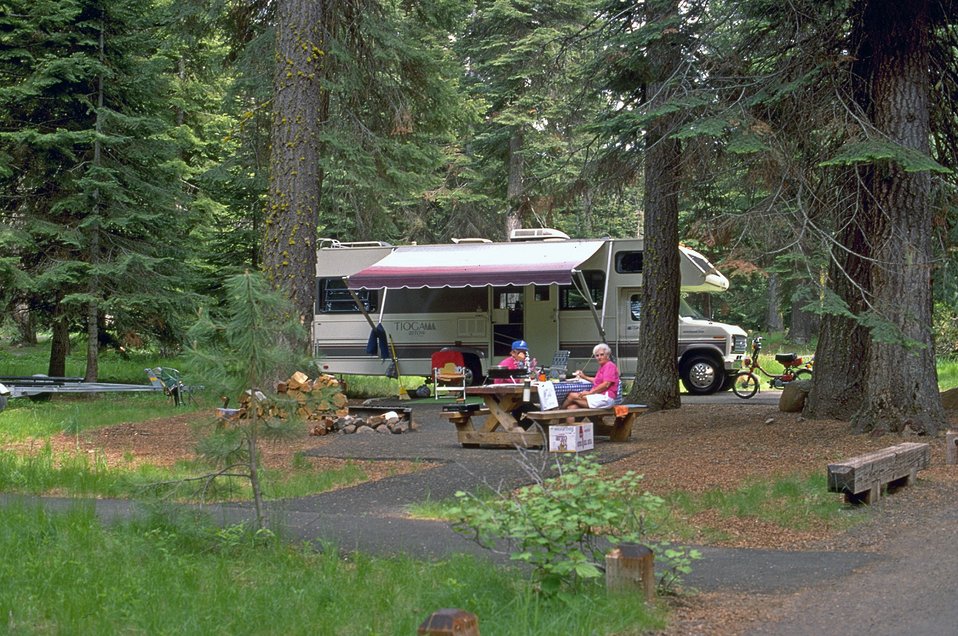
Campers at Hyatt Lake Campground.